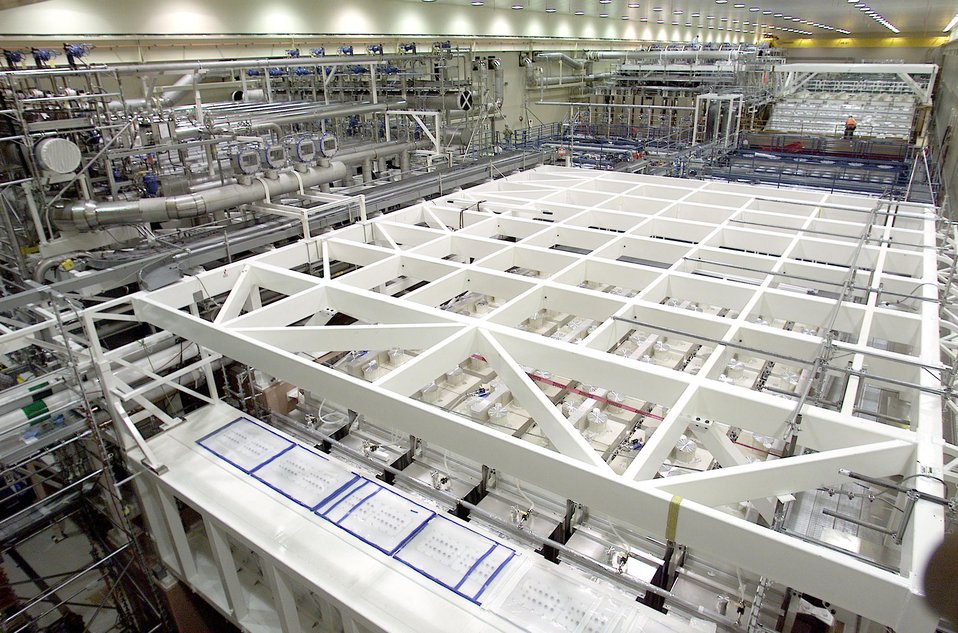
NIF'S AMPLIFIER COOLING SYSTEM ABOVE CLUSTER 3 WITH CLUSTER 4 INFRASTRUCTURE IN FOREGROUND.

THE NATIONAL IGNITION FACILITY AT LLNL ENABLES KEY PROGRAMS AND TECHNOLOGIES THAT SUPPORT DOE'S NATIONAL NUCLEAR SECURITY ADMINISTRATION DEFENSE PROGRAMS AND LLNL MISSIONS, ENSURING THAT THE NATION'S NUCLEAR WEAPONS REMAIN SAFE, SECURE AND RELIABLE. NIF, ONE OF THE CORNERSTONES OF DOE'S STOCKPILE STEWARDSHIP PROGRAM, WILL INTEGRATE THE INERTIAL CONFINEMENT FUSION PROGRAM INTO THE OVERALL STOCKPILE STEWARDSHIP PROGRAM AND FOSTER THE DEVELOPMENT OF ASSOCIATED LASER TECHNOLOGIES.